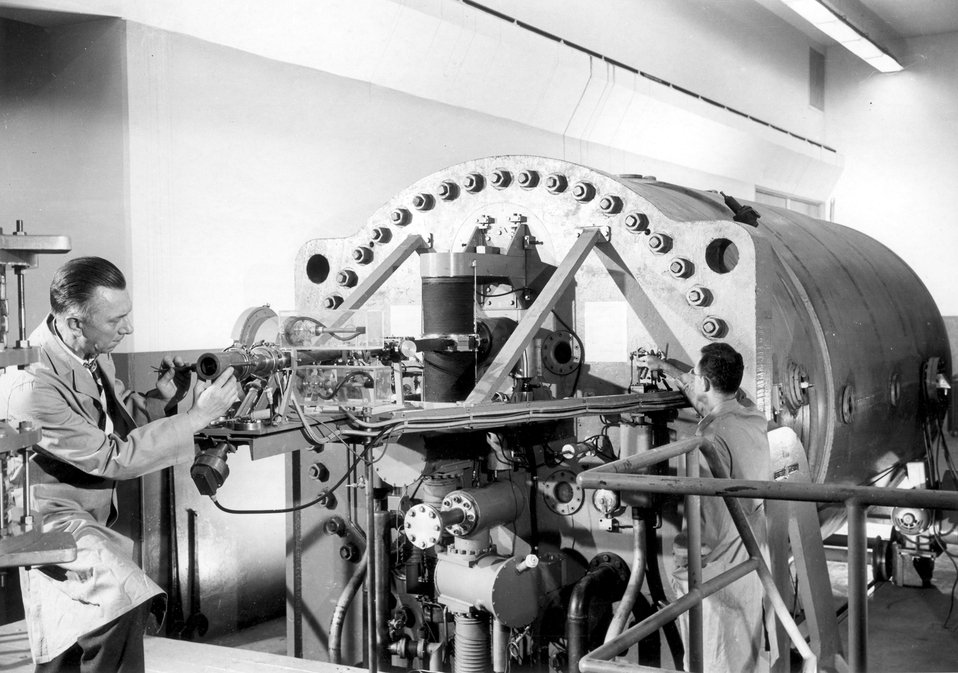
The linear electrostatic accelerator, known as the Van de Graaff Generator, at AEC's Brookhaven National Laboratory, Upton, L.I., N.W., accelerates subatomic particles to a speed approaching 15,000 miles per second, bombarding targets for physical, biological, medical or chemical research. c. 1955